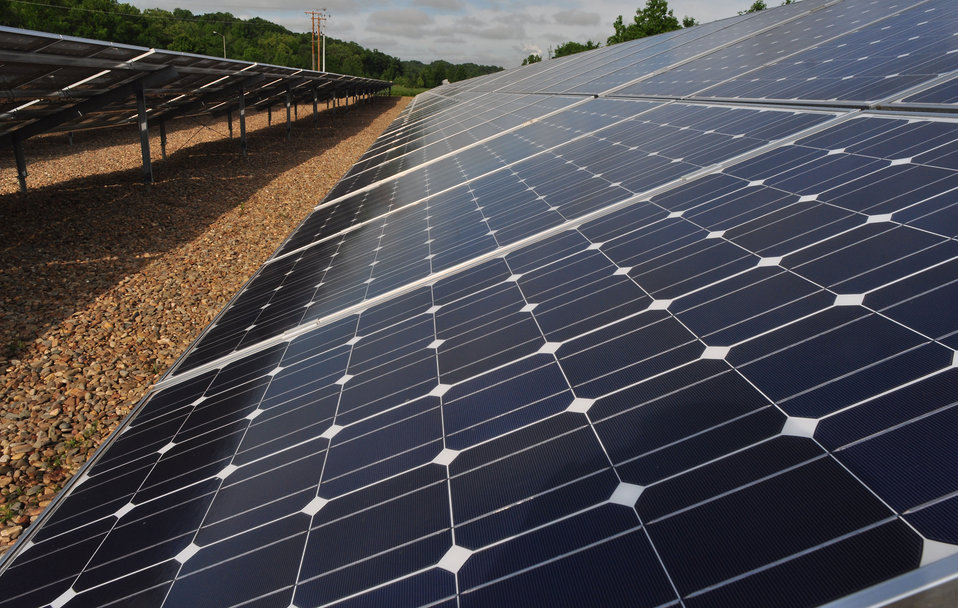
RSI Brightfield 1 solar array at East Tennessee Technology Park

12-086-247 DOE photo by Lynn Freeny

Oak Ridge Tennessee 5/15/2012